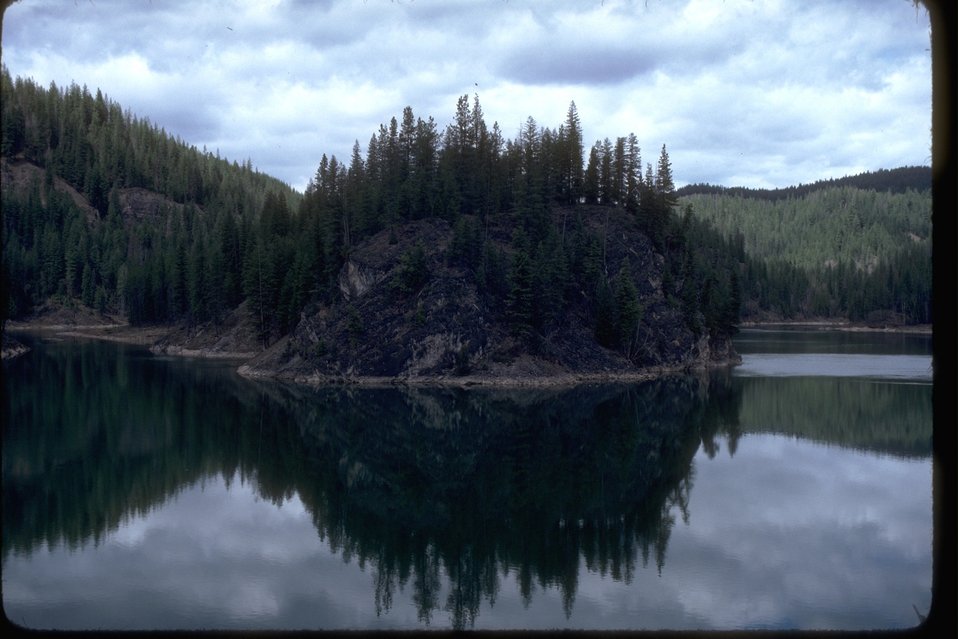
Island in Pend Oreille River near Boundary Dam.